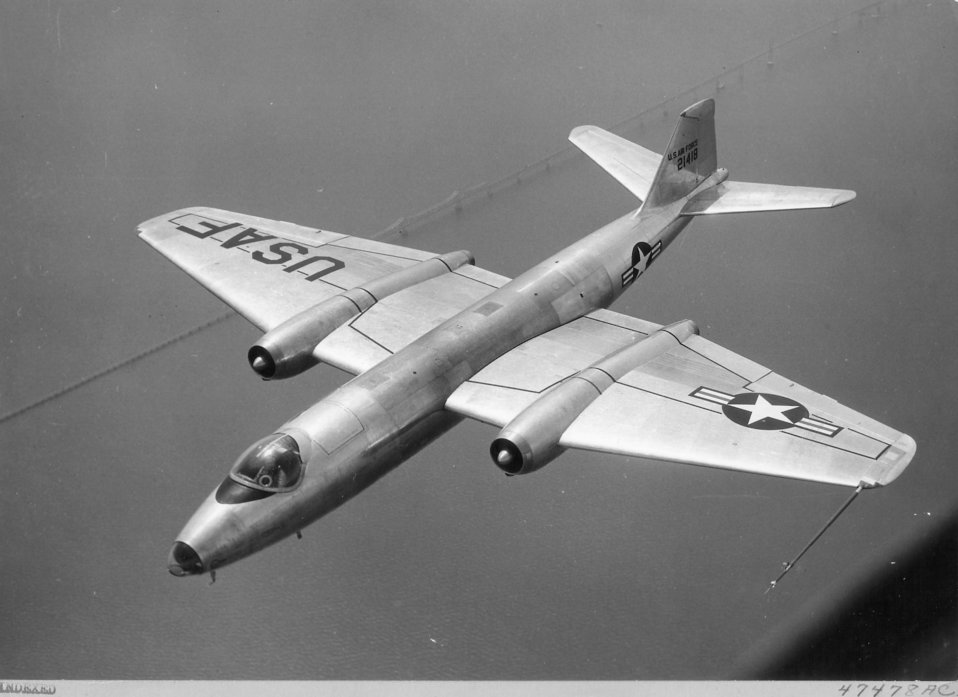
Martin RB-57 '

1950's -- Martin RB-57 '